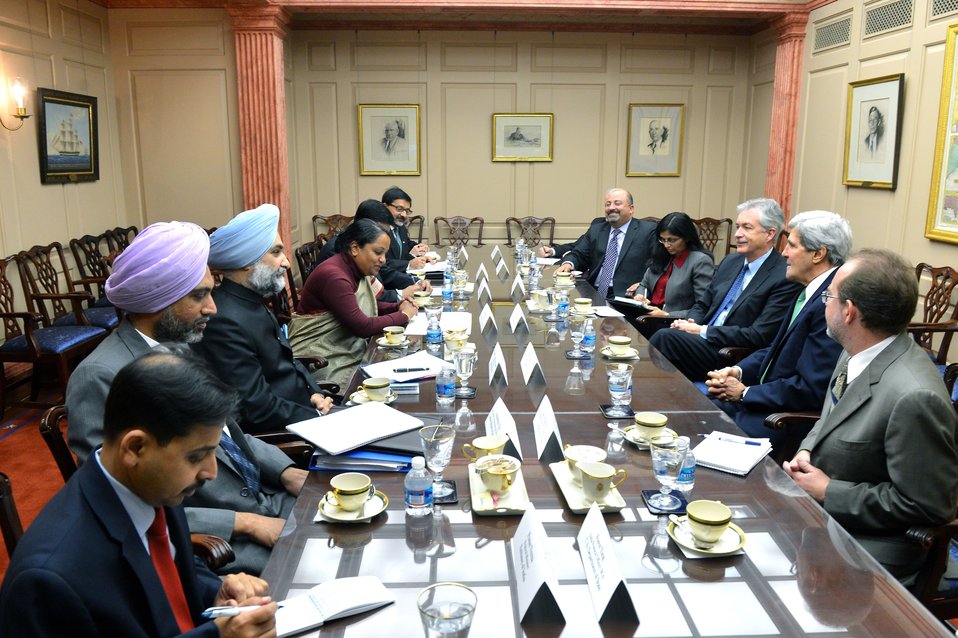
Secretary Kerry Meets With Indian Foreign Secretary Singh

U.S. Secretary of State John Kerry holds a bilateral meeting with Indian Foreign Secretary Sujatha Singh at the U.S. Department of State in Washington, D.C., on December 10, 2013.